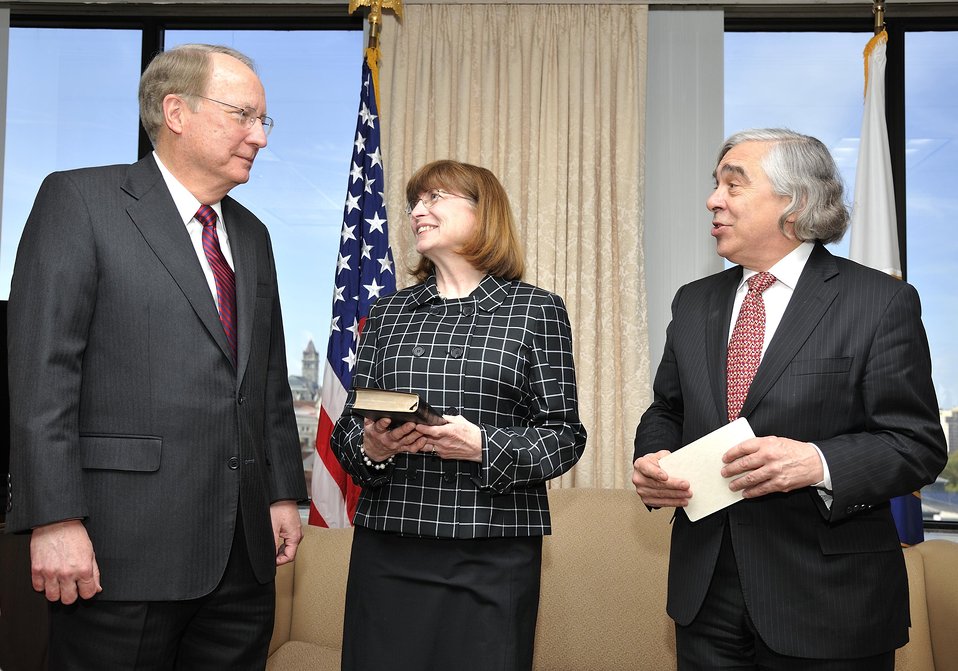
Secretary of Energy Ernest Moniz prepares for swearing in of Frank G. Klotz as the Department of Energy’s Undersecretary for Nuclear Security and NNSA Administrator in a private ceremony this afternoon. General Klotz was joined by his wife, Nancy, and Acting Administrator Bruce Held on April 17, 2014 .